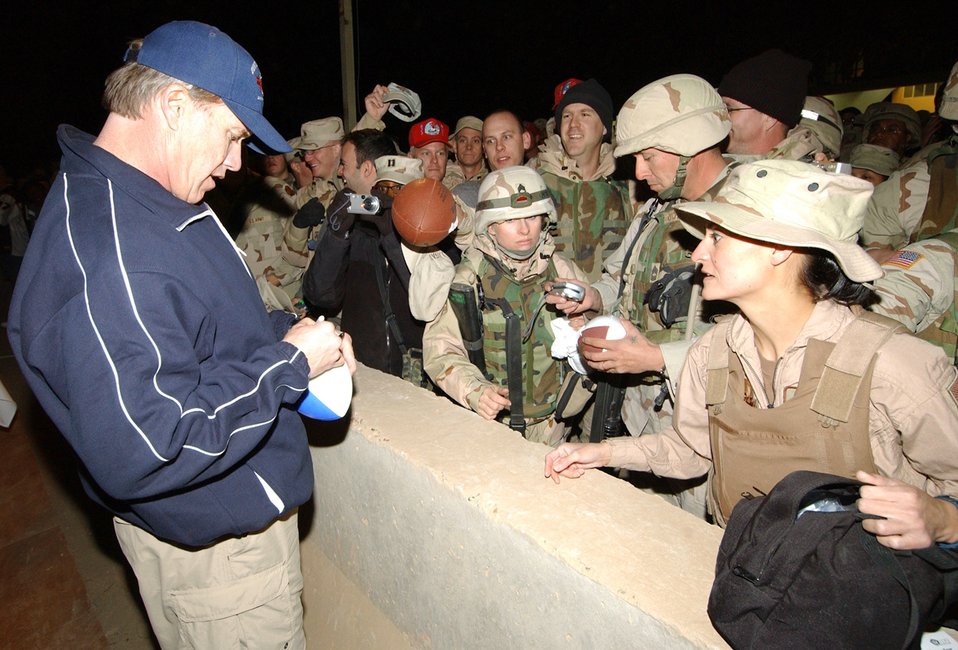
Balad Airmen welcome USO tour

BALAD AIR BASE, Iraq -- John Elway autographs a football for Master Sgt. Jeannie Helms (right) of the 379th Expeditionary Aeromedical Evacuation Squadron during the Chairman's United Service Organizations Holiday Tour here Dec. 14.